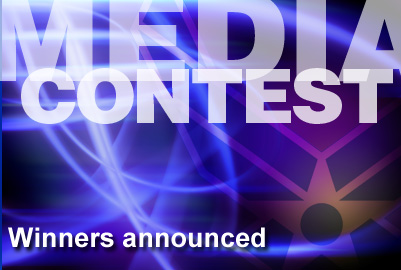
Air Force Media Contest winners

U.S. Air Force graphic)